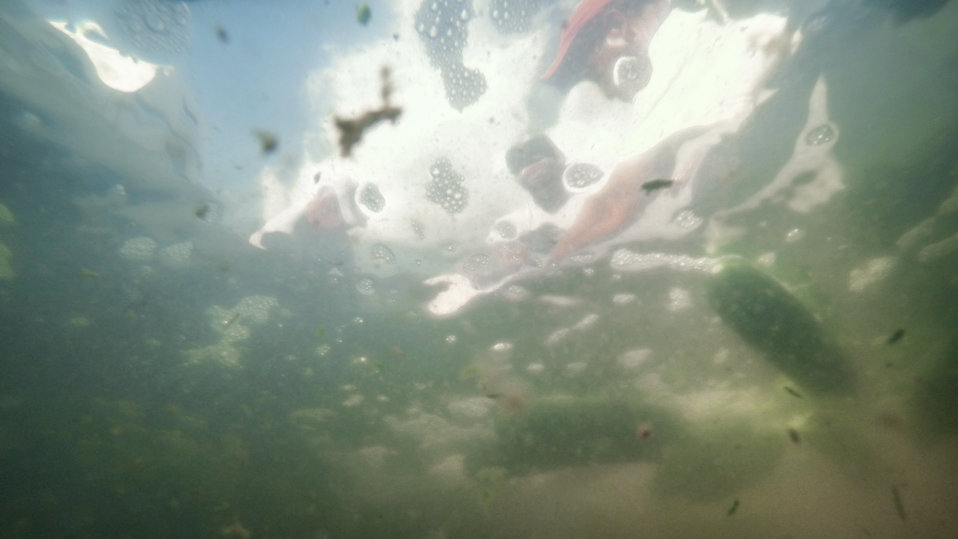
Migrant workers rinse away loose soil and bits of squash blossoms before packing the green zucchini squash, in Mechanicsville, VA on Friday, Sept. 20, 2013.